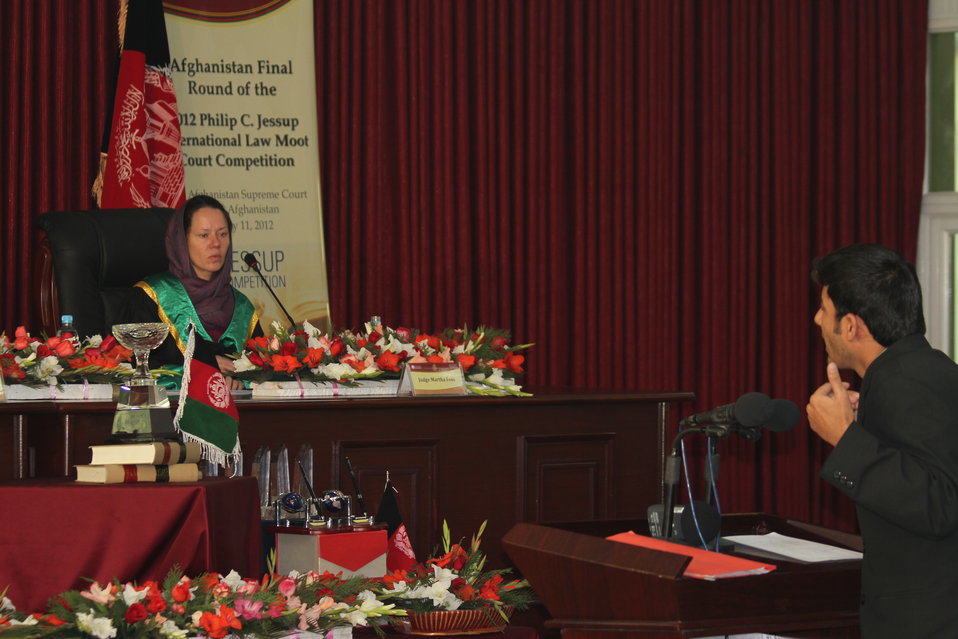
Defense Presents

Al Biruni student defends arguement in Jessup Moot court, January 11, 2012